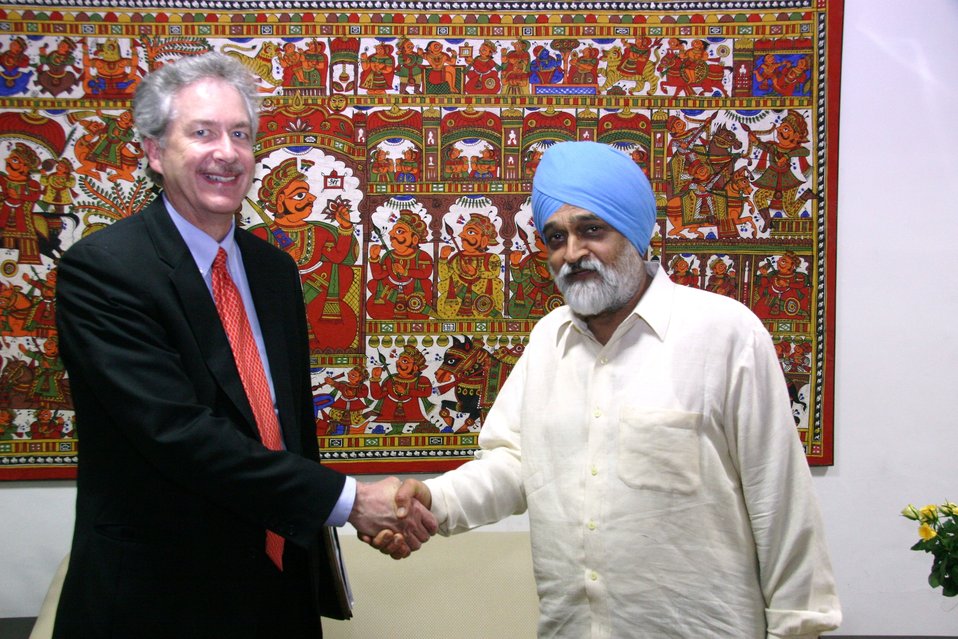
Under Secretary Burns Shakes Hands With Indian Deputy Chairman of the Planning Commission Montek Singh Ahluwalia

Under Secretary for Political Affairs William J. Burns shakes hands with Indian Deputy Chairman of the Planning Commission Montek Singh Ahluwaliain New Delhi, India, on May 24, 2010.